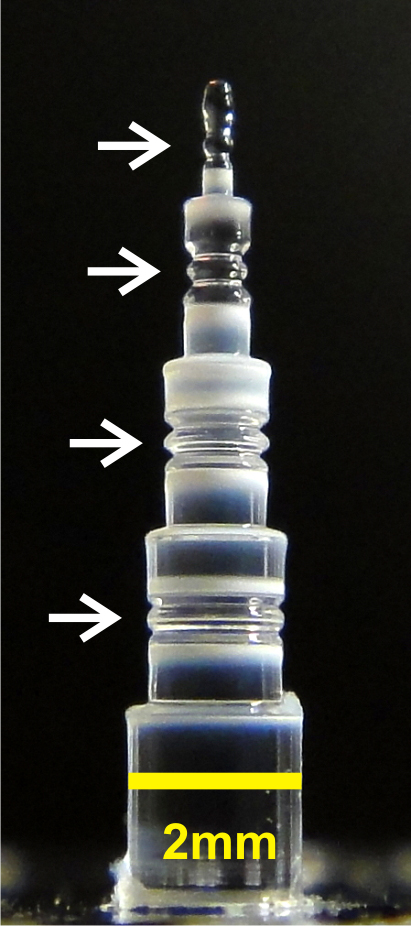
Frequency Comb Cavities

NIST physicists have developed a one-minute process for creating optical microcavities made of fused quartz. The photo shows four cavities with diameters (top to bottom) of 0.36 millimeters (mm), 0.71 mm, 1.2 mm, and 1.5 mm. When excited with laser light, the cavities can be used for many applications, including the generation of frequency combs used to precisely measure different colors of light. Smaller cavities produce wider spacing between the comb teeth (specific colors).